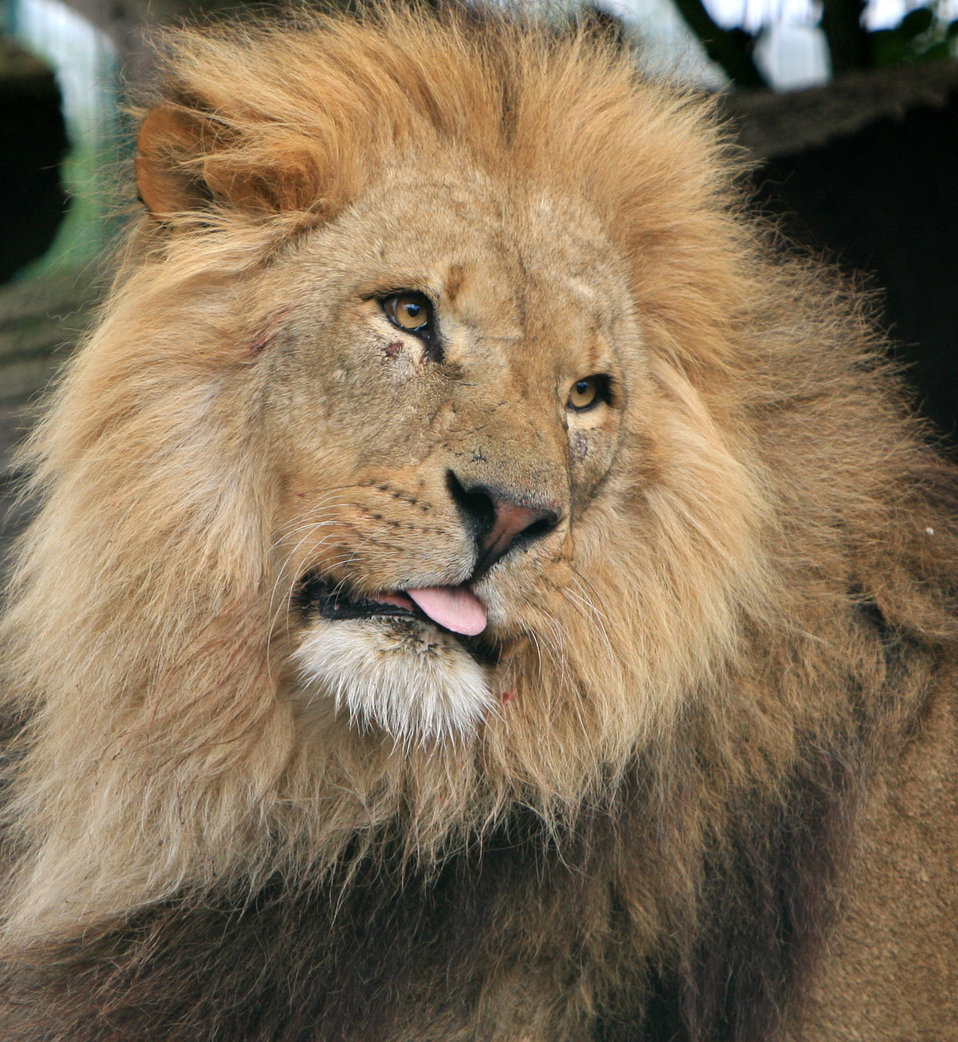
Lion

Close-up portrait of a beautiful male lion head photo.